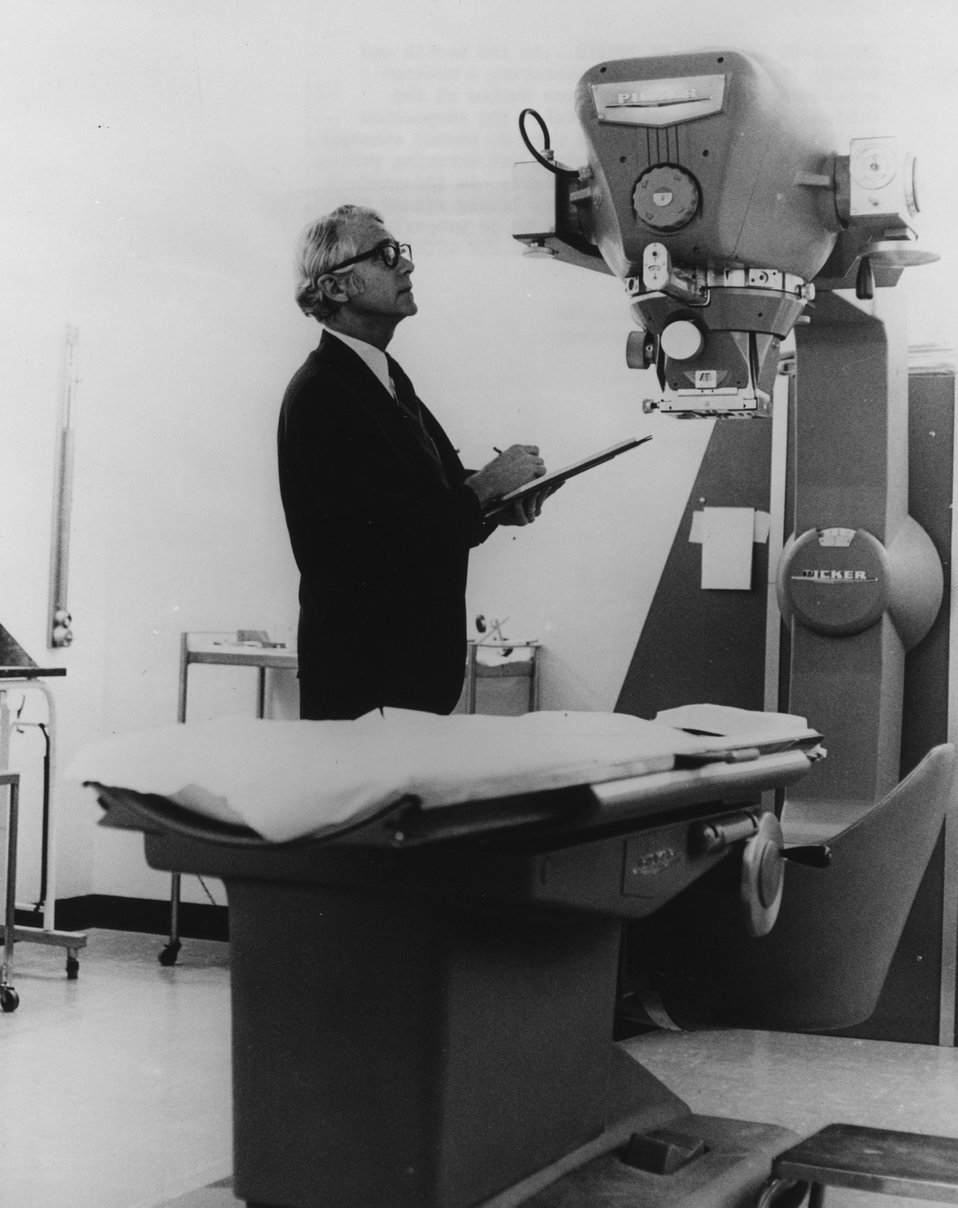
An AEC health and safety inspector is shown inspecting a medical cobalt-60 teletherapy treatment device at the Oakland (Calif.) Naval Hospital. Circa 1973.